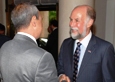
July 4th Celebration at U.S. Interest Section in Cuba

United States Interest Section Havana Chief of Mission Jonathan Farrar delivers remarks at the U.S. Independence Day reception in Havana, Cuba, on July 2, 2010.